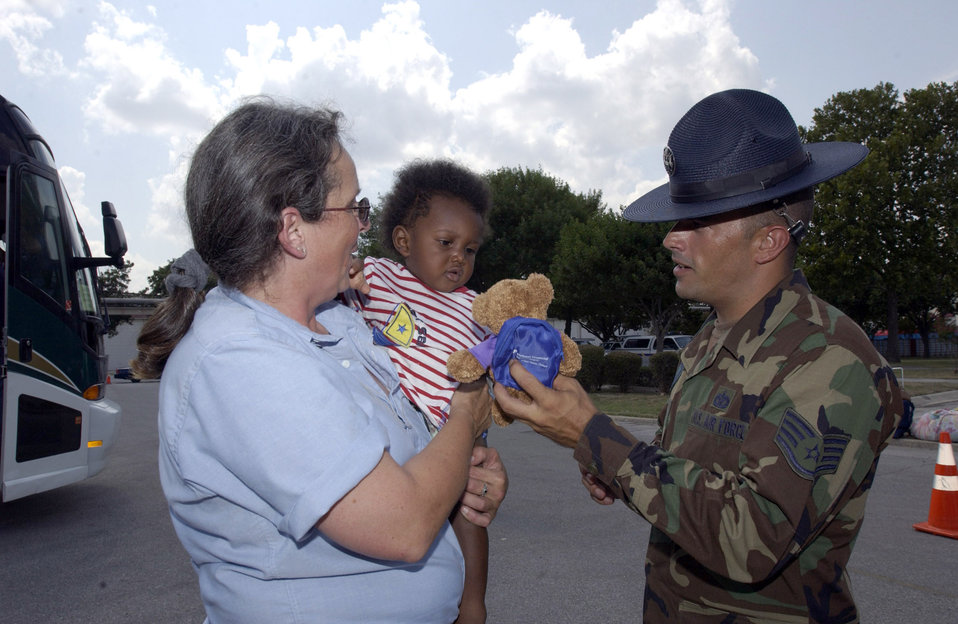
Aeromedical evacuation hub established at Lackland

SAN ANTONIO -- Staff Sgt. Chris Clark, gives tiny evacuee Antonio Michaels a stuffed animal as he arrived here. The evacuees arrived Sept. 2 from New Orleans. They are being inprocessed, given a medical checkup, fed and put into temporary shelters. Sergeant Clark is a technical instructor with the 737th Training Squadron at nearby Lackland Air Force Base, Texas.